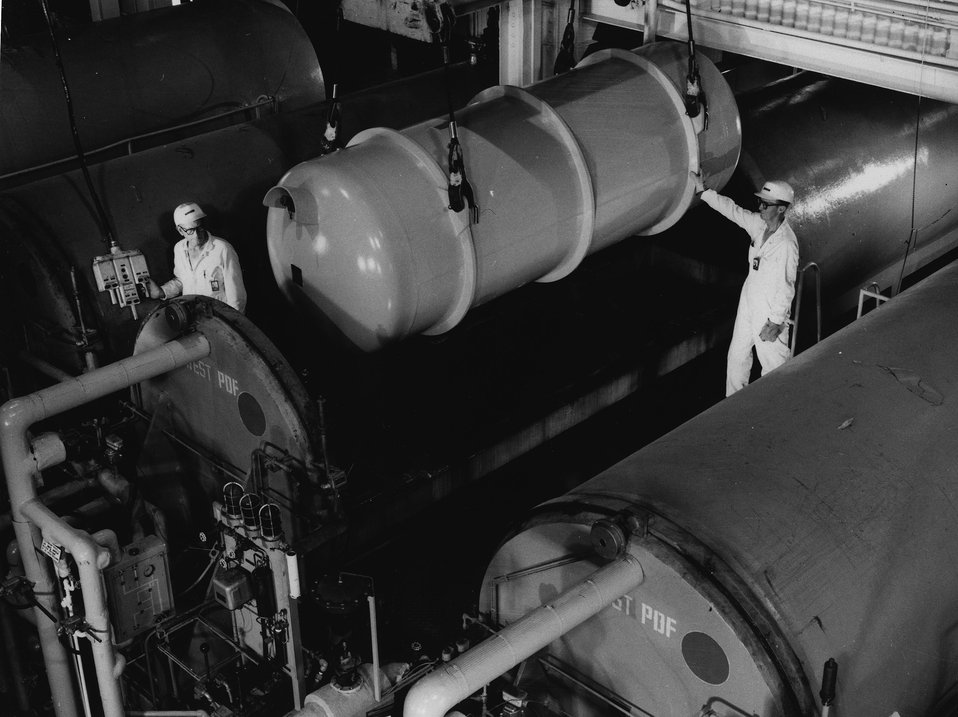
A cylinder of uranium hexaflouride is lowered into a giant autoclave at the Energy Research and Development Administration's Gaseous Diffusion Plant at Oak Ridge, Tennessee. c. 1971